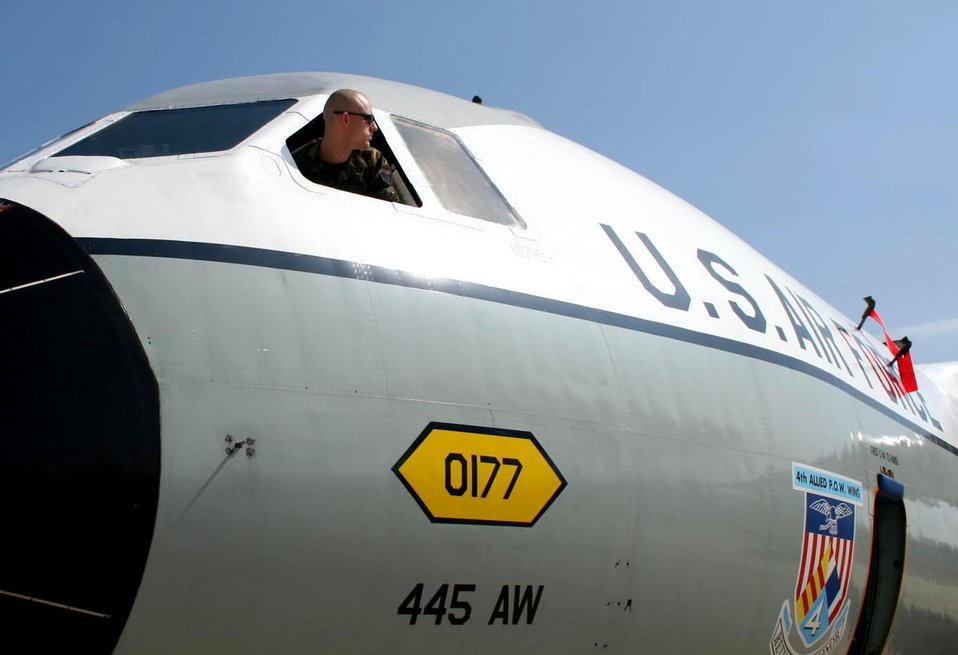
Former POWs relive freedom flights

Senior Airman Christopher Braun, a reservist with the 445th Aircraft Maintenance Squadron at Wright-Patterson Air Force Base, Ohio, controls the stick of this C-141 Starlifter, also known as the